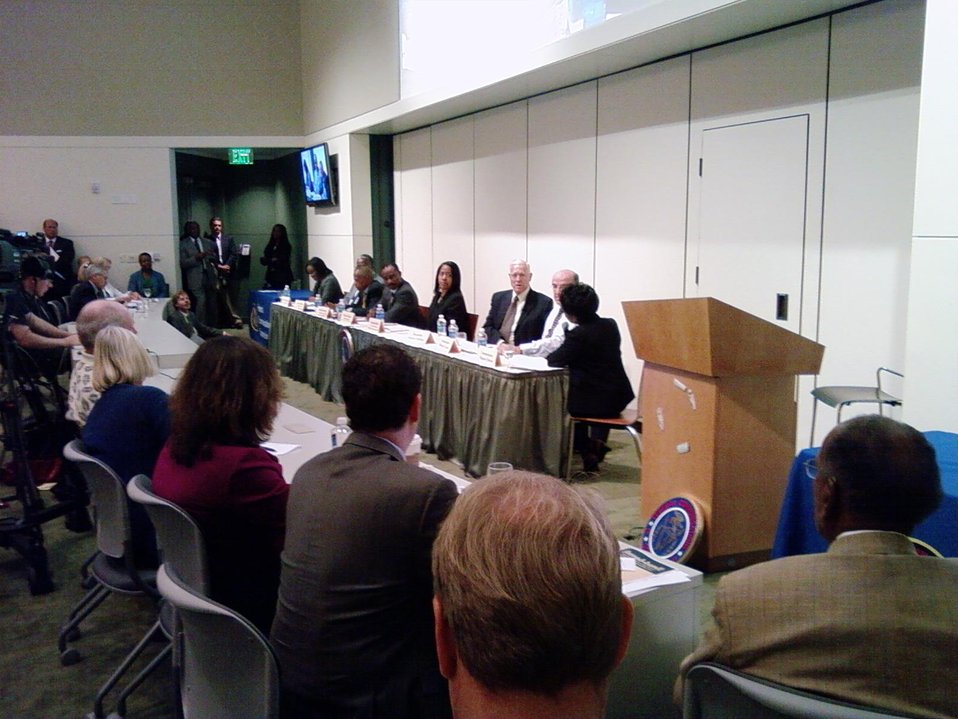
Field Hearing on Broadband Adoption 10-6-09